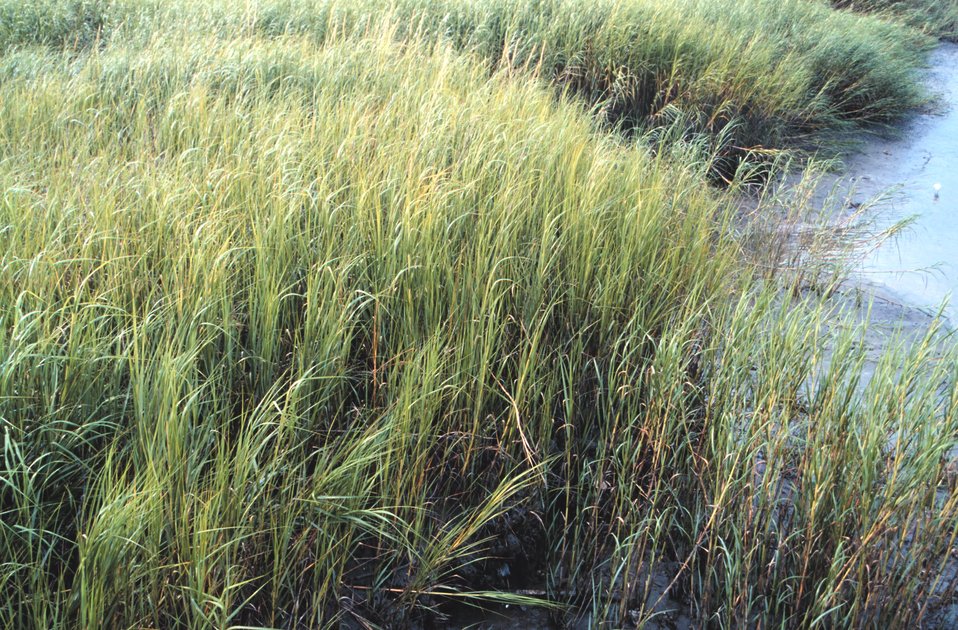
Tidal mudflats